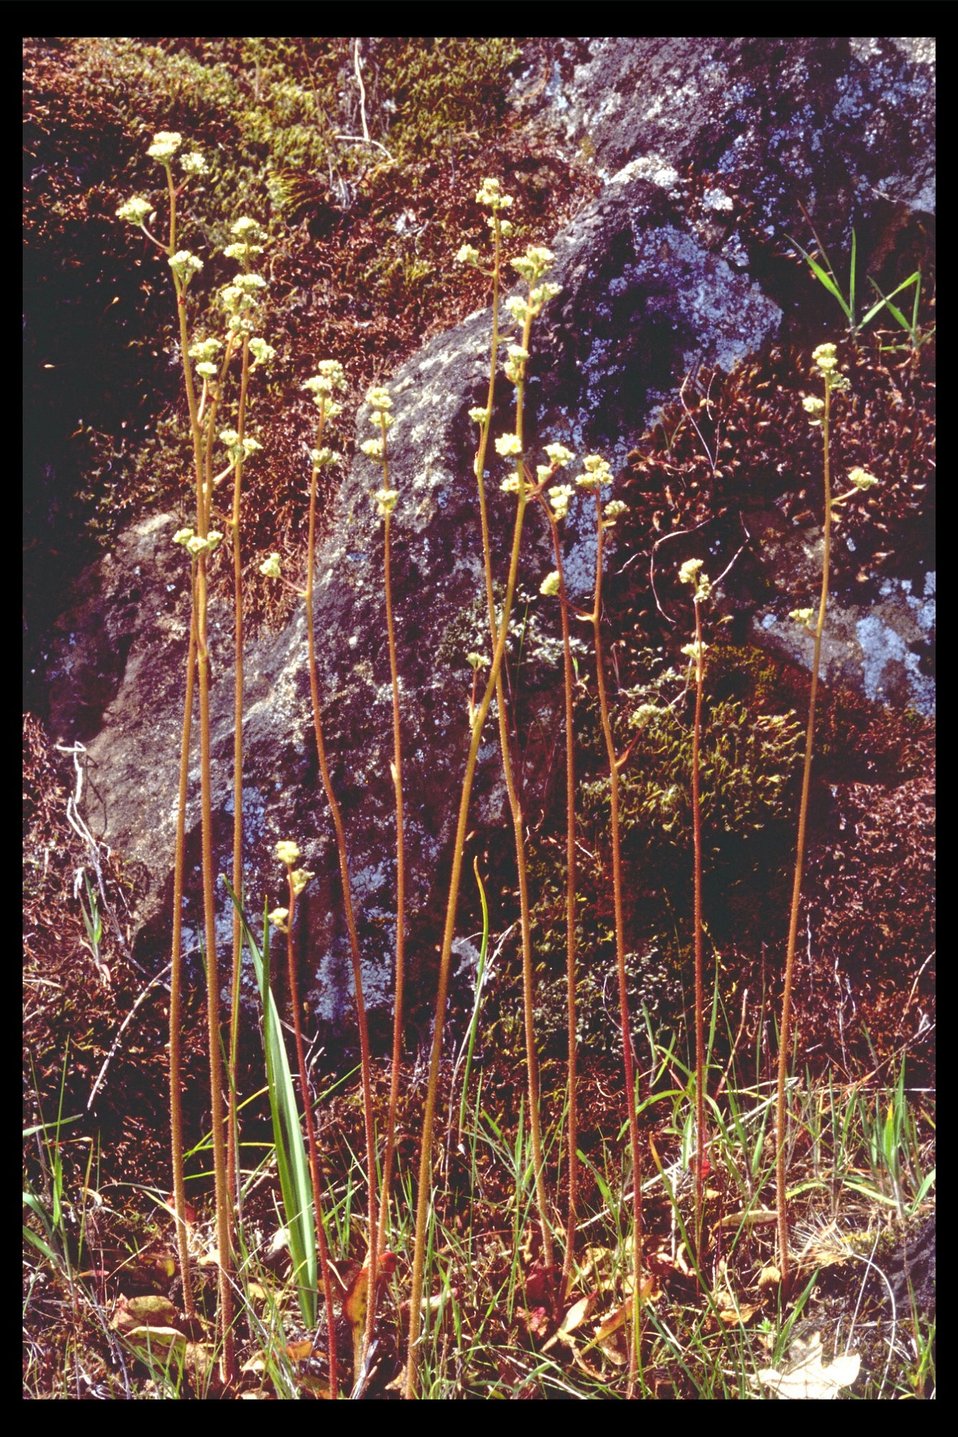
Saxifrage (Saxifraga sp.) found in Shady Cove.